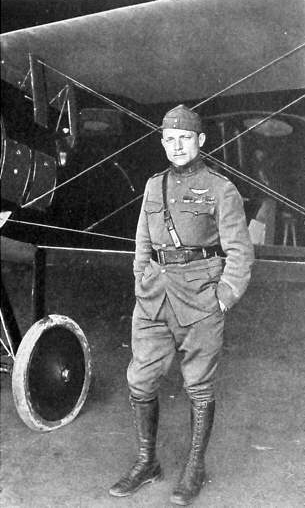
Major Raoul G. Lufbery

EARLY YEARS -- Raoul Gervais Lufbery, the third highest scoring American ace for World War I, was the first American to reach ace status. He was member of the famed Lafayette Escadrille before transferring to the U.S. Air Service following the nation's entry into the war. He had 17 confirmed victories with the French.